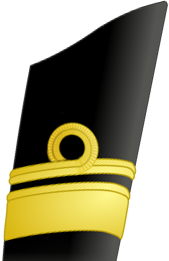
Updated Canada's Rear Admiral
Category:Military rank insignia of Canada